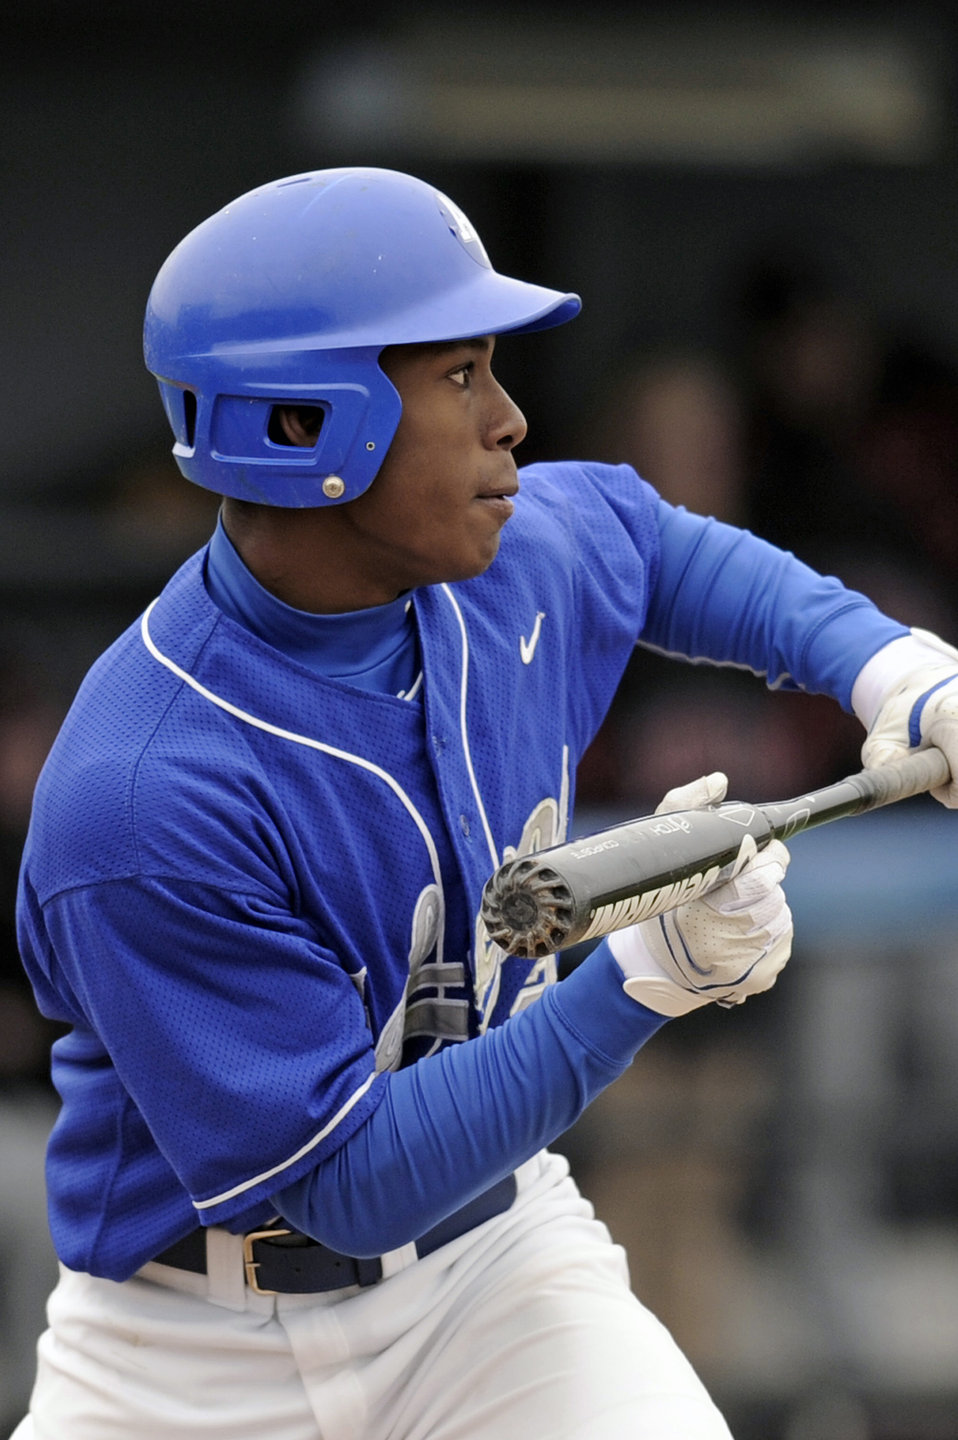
Baseball: Academy battles UNLV, falls 20-13

U.S. Air Force Academy junior centerfielder Daniel Walker squares up for a bunt during the 20-13 loss to the University of Nevada, Las Vegas at Falcon Field April 25 at the Academy in Colorado Springs, Colo. The loss dropped Air Force to 14-25 overall, with a Mountain West Conference record of 3-8